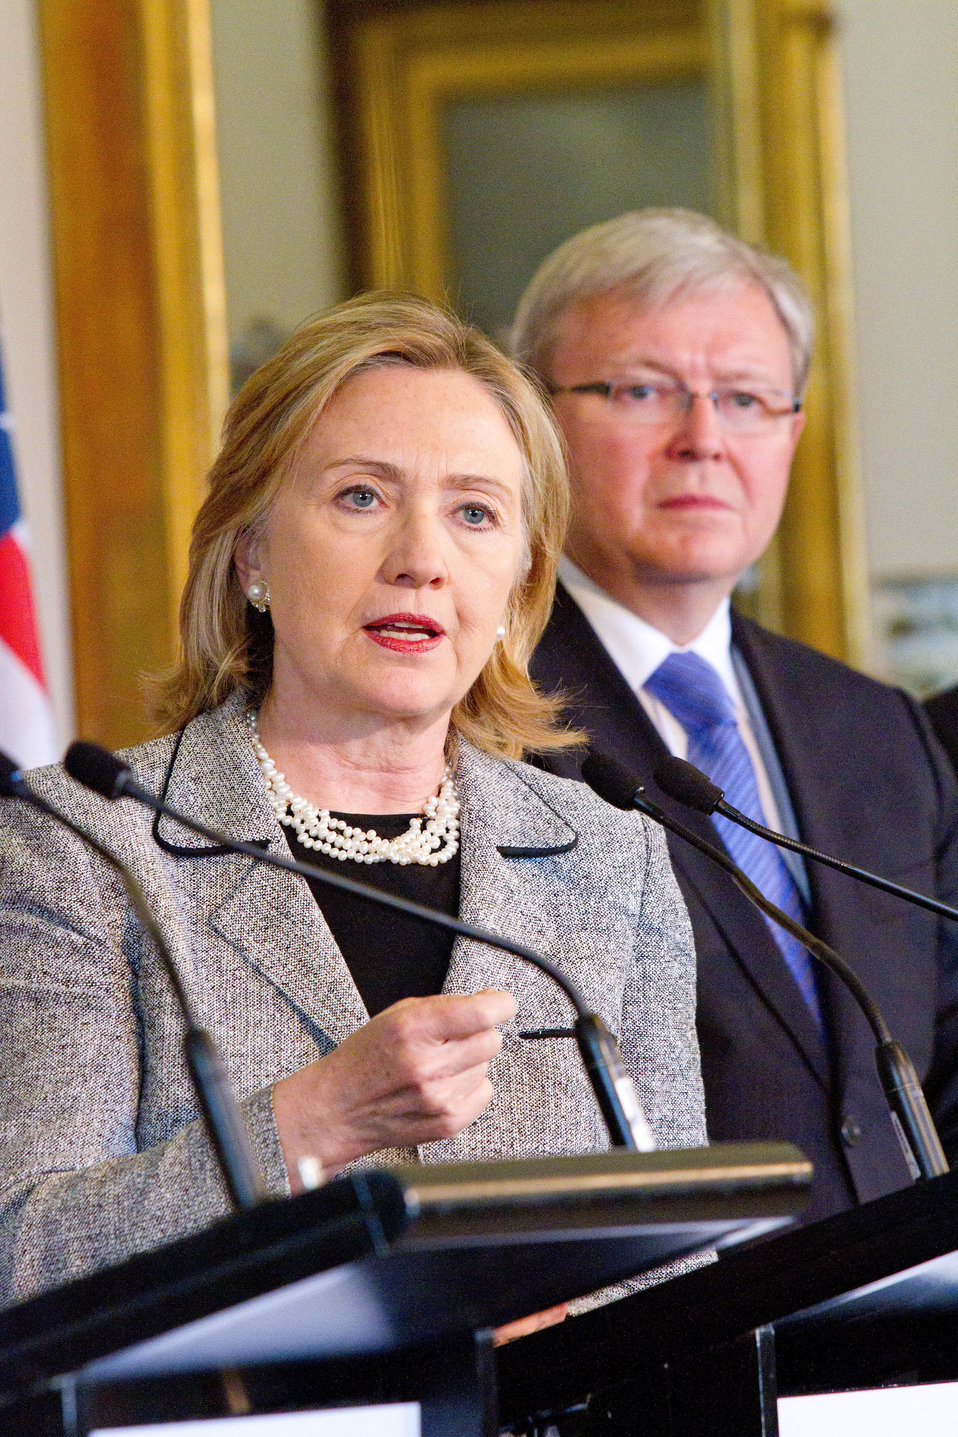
Secretary Clinton Speaks at the AUSMIN Press Conference

U.S. Secretary of State Hillary Rodham Clinton speaks during a press conference as Australian Foreign Affairs Minister Kevin Rudd looks on after the annual Australia-U.S. Ministerial Consultations (AUSMIN) at the Government House in Melbourne, Australia, on November 8, 2010.